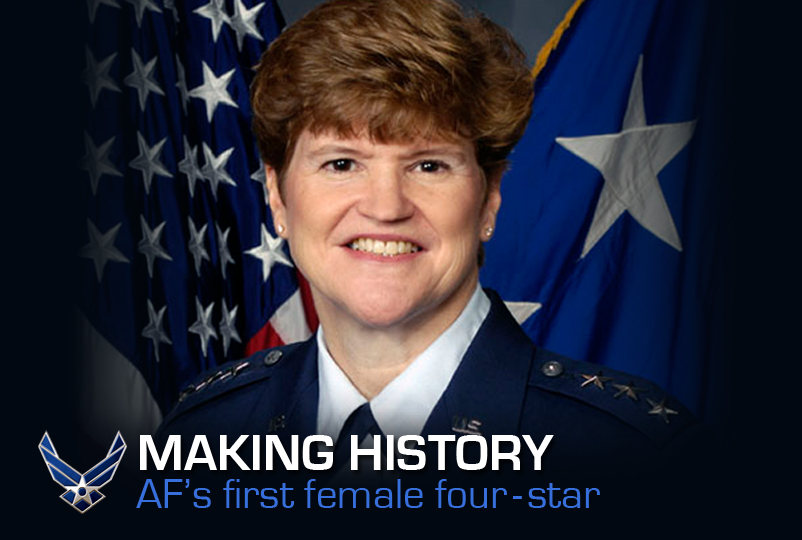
Making History